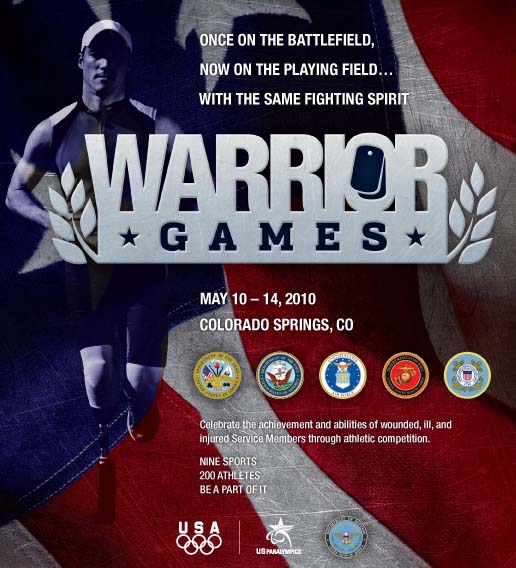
Warrior Games

The inaugural Warrior Games will be in Colorado Springs, Colo., May 10 to 14.